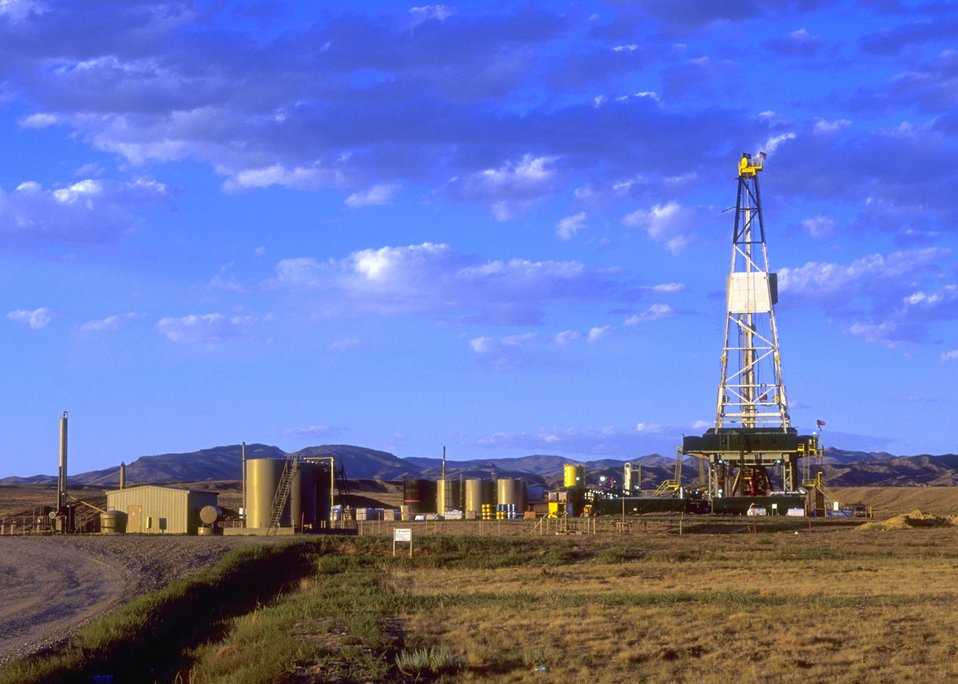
Burlington Northern deep well rig, Casper Field Office.